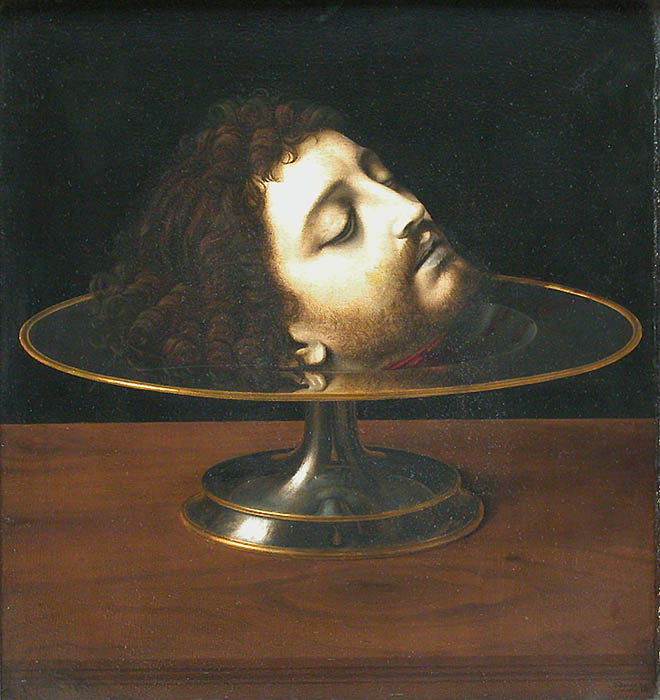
Andrea solario, testa del battista